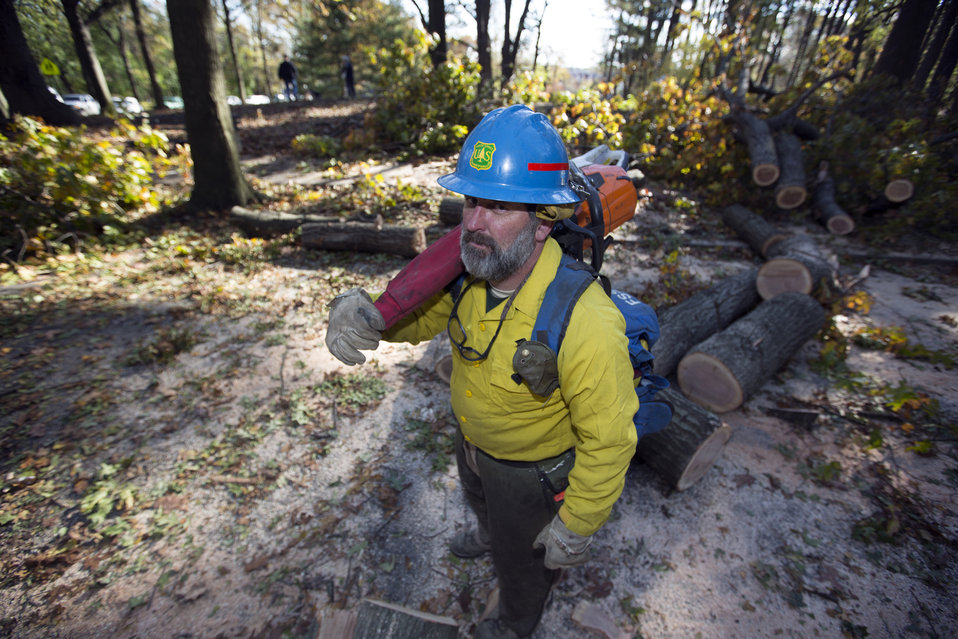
U.S. Forest Service crewmember Bill Scripp finishes the job of sawing downed trees at Forest Park in Queens, NY on Nov. 4, 2012 to make passage safe for residents. The park is a major walking thoroughfare, including popular recreational trails. Bill Scripp belongs to the Wayne National Forest, in Ohio Valley, OH.